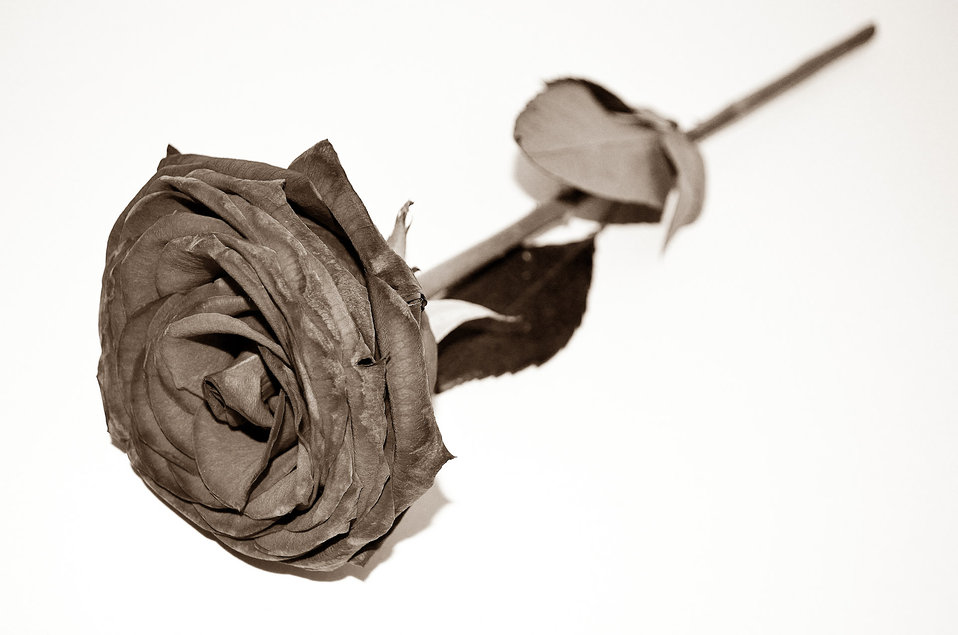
Dead roses - background.